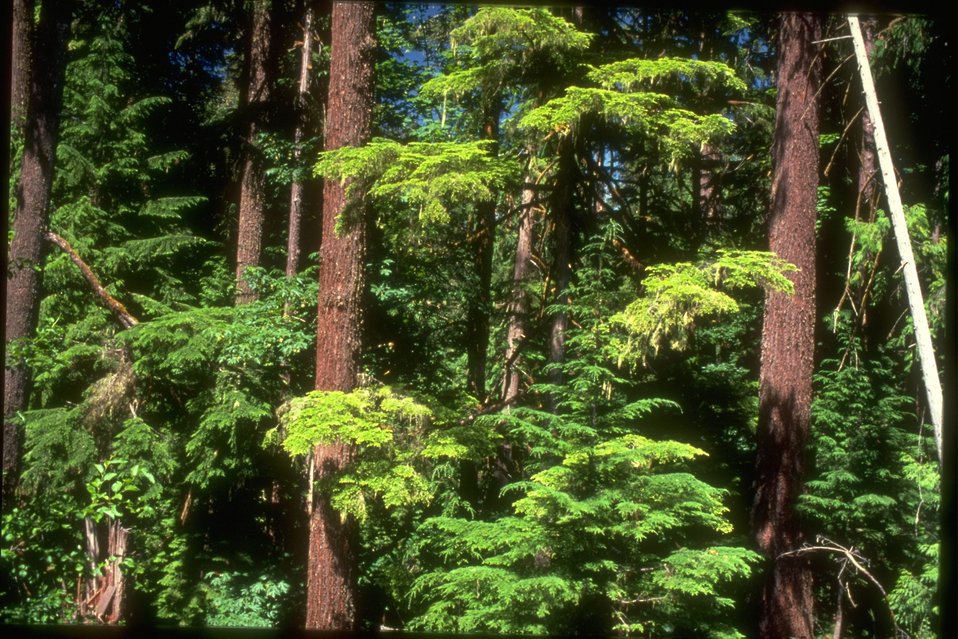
Forest Scene: Multi Story Canopy.